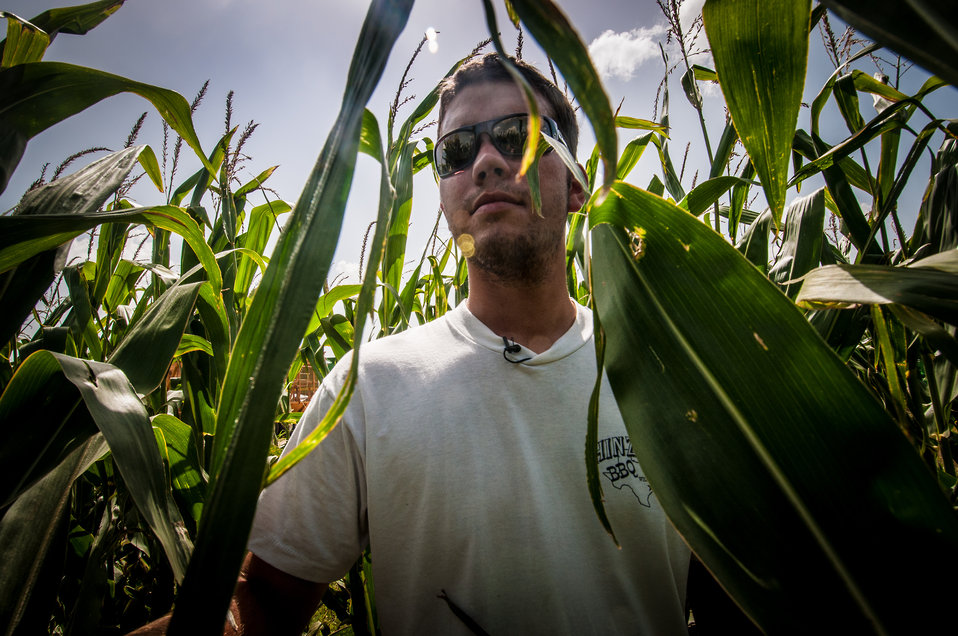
Philip Marek checks the health of a crop of #2 yellow corn at his father's farm, in Wharton County, TX, on Jun. 20, 2013. Philip Marek has been a farm owner since 2010 and started with 210 acres. Marek and his cousin Josh Marek were able to use a U.S. Department of Agriculture (USDA) Farm Services Agency (FSA) small and new farmer and rancher loan programs provided them the ability to handle initial business start-up and equipment purchase.